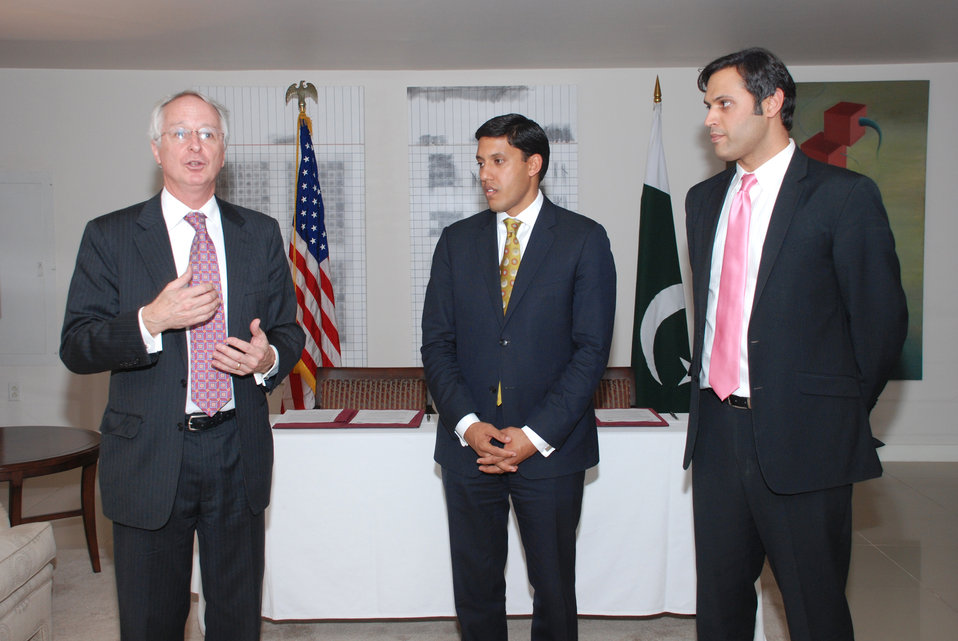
MoU Signing Ceremony between USAID and APF at Islamabad on April 18, 2012

Cameron Munter addressing the USAID and APF officials